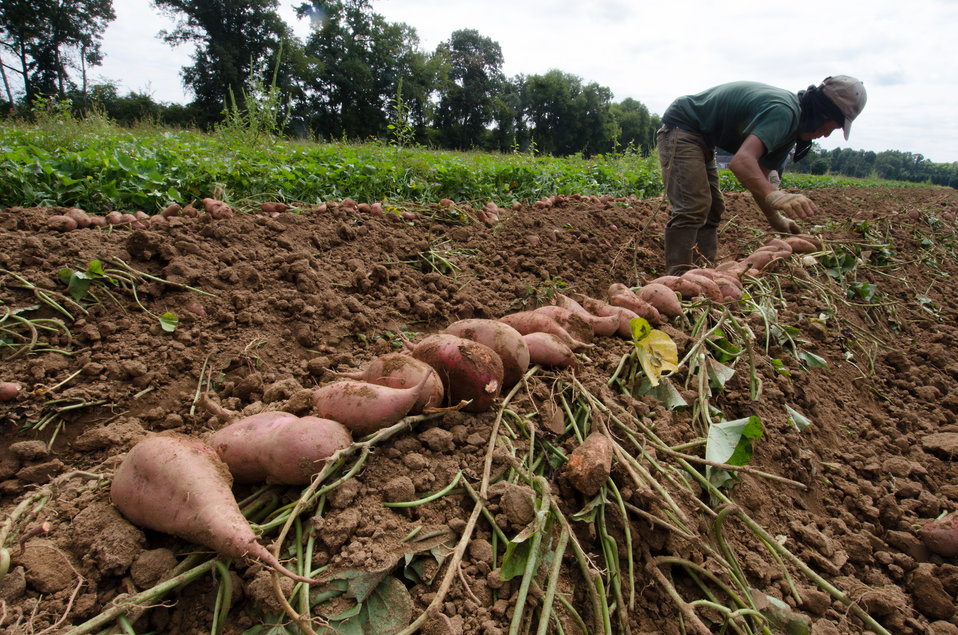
Harvested hand picked large sweet potatoes, at Kirby Farms in Mechanicsville, VA on Friday, Sept. 20, 2013. 200 acres of the farm are devoted to eggplant, spinach, beets, tomato, jalapeno peppers, melons and a variety of greens. Soybeans and small grain are grown on the remaining 300 acres. Using rotational crop practices allows Kirby Farms to double and triple crop yields. Wholesalers, who buy from this farm, sell the produce to major supermarkets in the Mid-Atlantic region, from North Carolina to Maryland. Restaurants in the local area prepare and serve the local bought produce to patrons in the Richmond, VA metropolitan area.